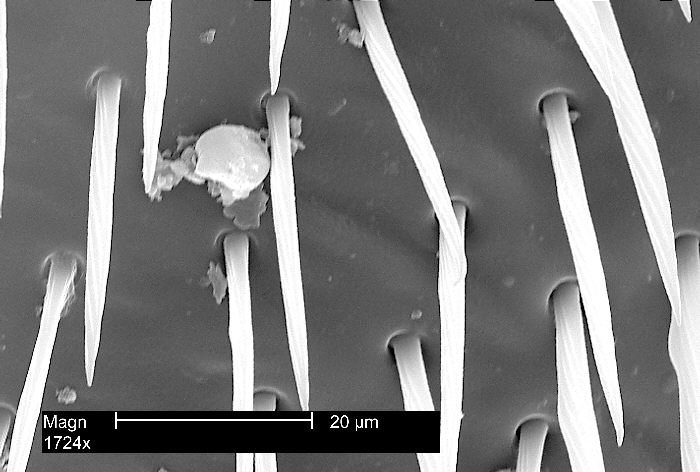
An electron micrograph of a wasp's leg appendage revealing small, highly sensitive hairs on its surface magnified 1724x.